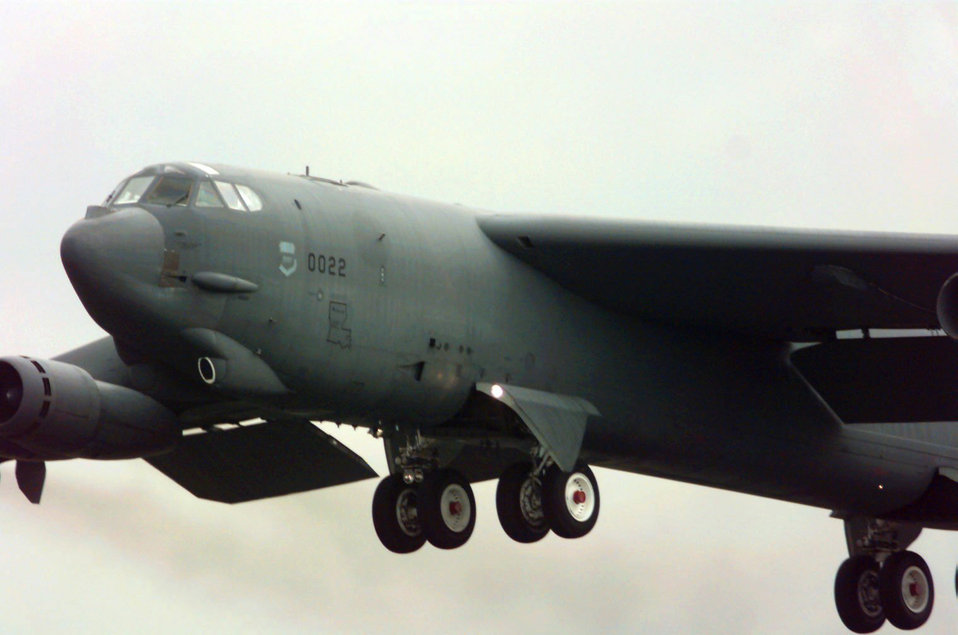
Buff deployed

ROYAL AIR FORCE FAIRFORD, England -- A B-52H, assigned to Barksdale Air Force Base, Louisiana, lifts off from here, March 24, 1999. Elements of the 2nd Bomb Wing deployed to the United Kingdom in support of the 2nd Air Expeditionary The 2nd AEG is in place at RAF Fairford to support possible NATO operations in the former Yugoslavia.